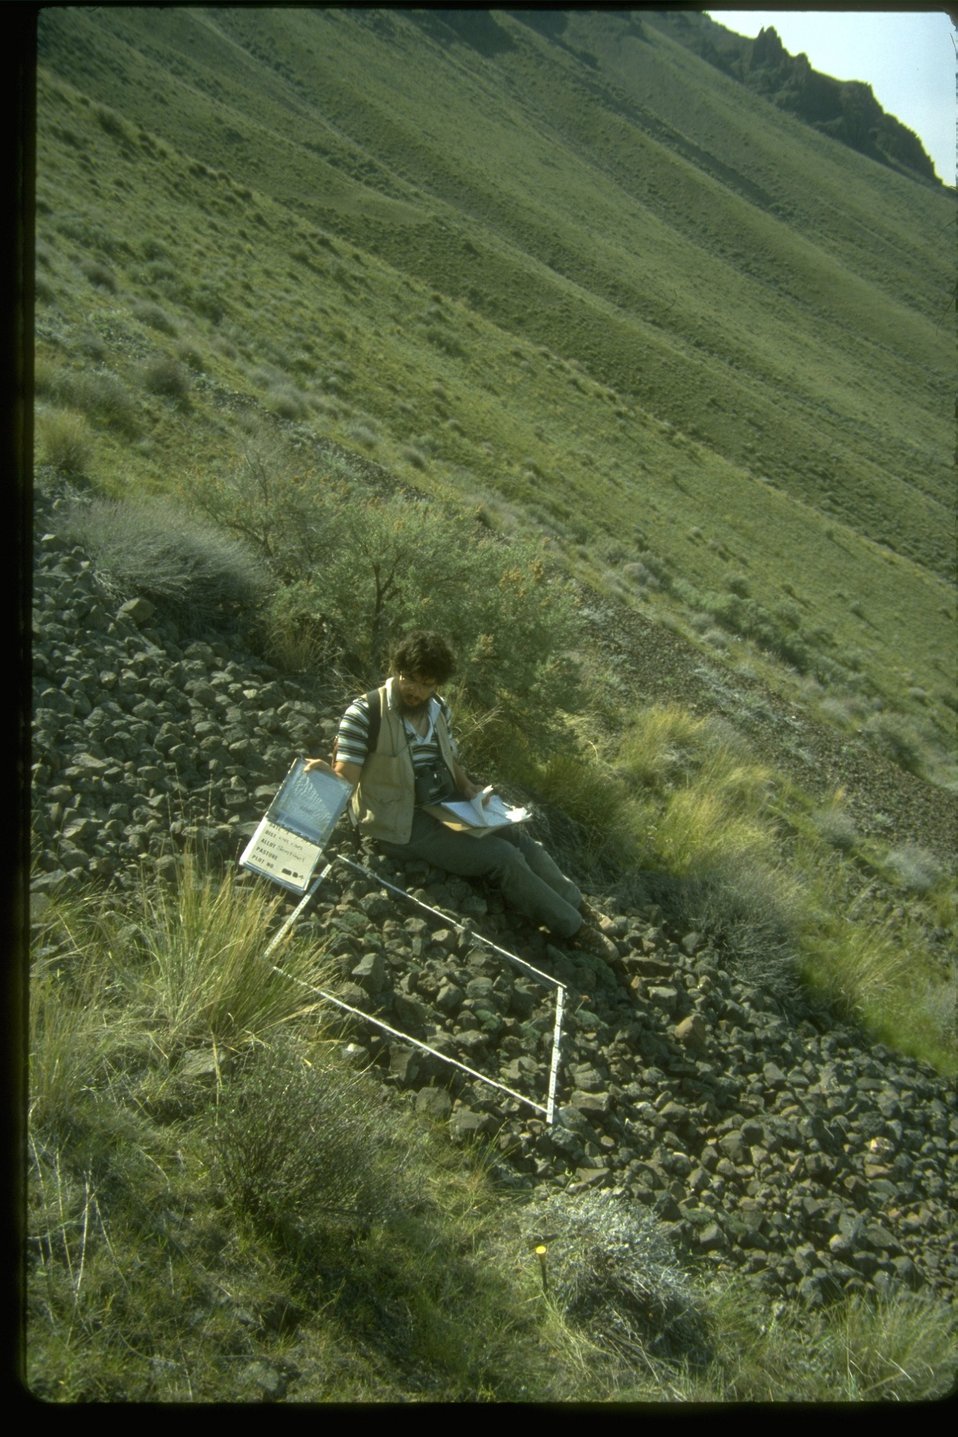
Rare plant monitoring on Sentinel Slope in Saddle Mountains Management Area, Washington.